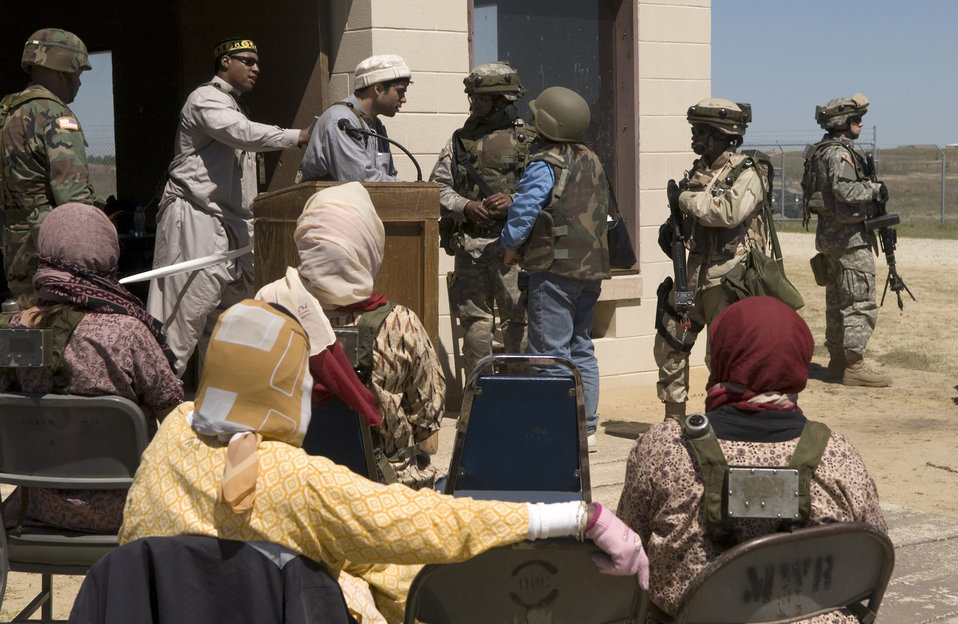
Provincial Reconstruction Team training

Airmen and Soldiers from a multi-service provincial reconstruction team work through a community relations scenario during training Tuesday, April 4, 2006, at Fort Bragg, N.C. The team's aim is to help with the reconstruction, security and governing of Afghanistan. The team is training in the United States before deploying for a year.